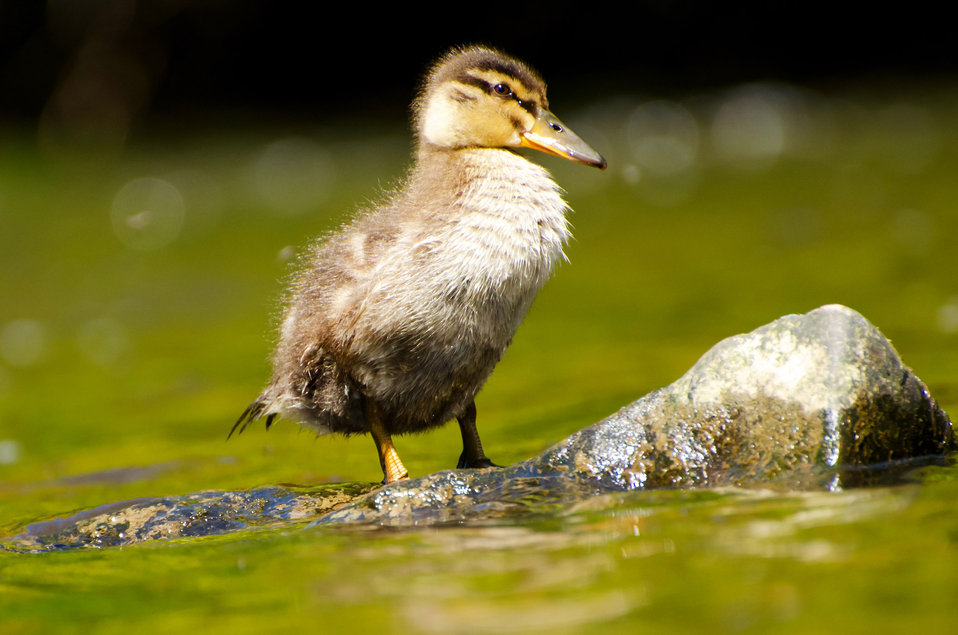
Duckling - macro.